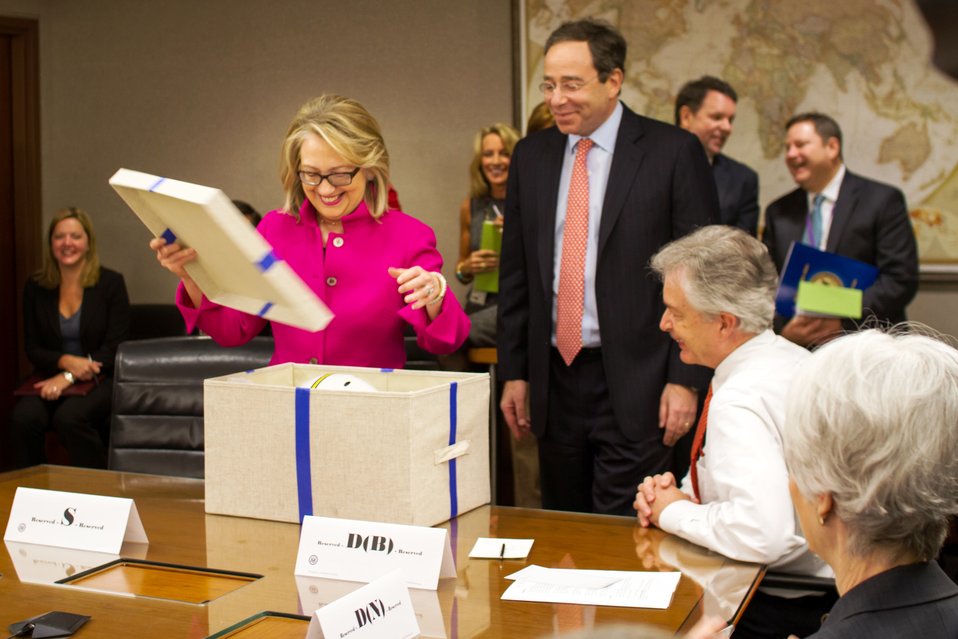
Secretary Clinton Opens a Gift

U.S. Secretary of State Hillary Rodham Clinton opens a gift presented by Deputy Secretary of State Thomas Nides on her return to the office in Washington, D.C., January 7, 2013.